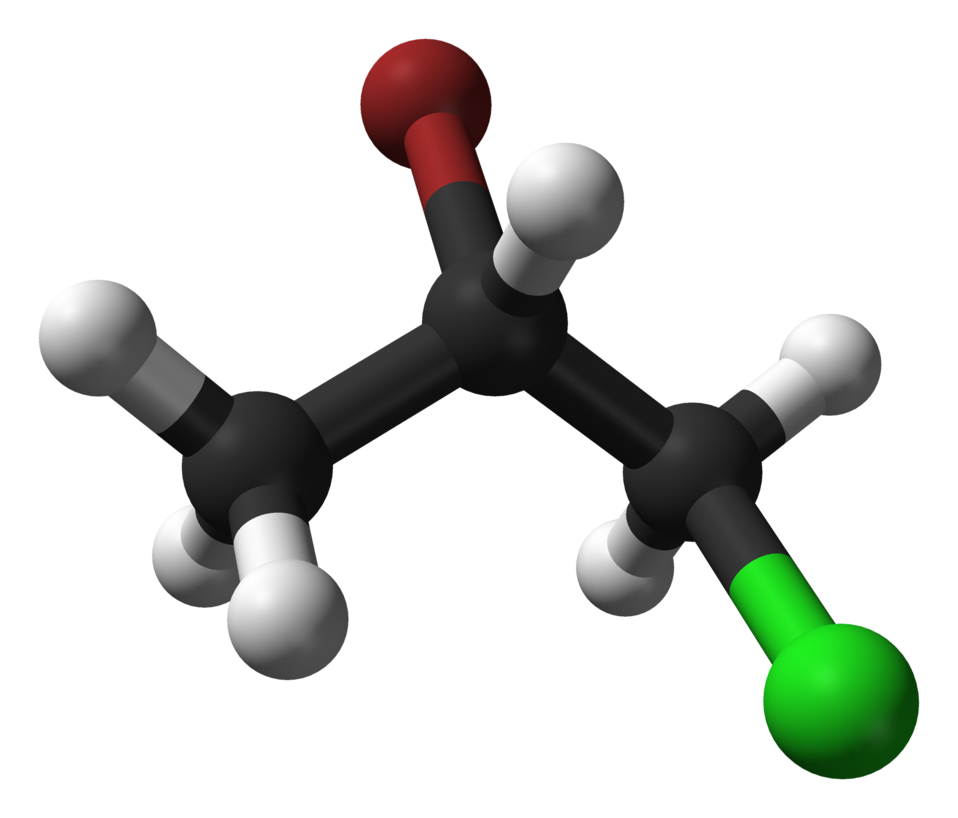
Ball-and-stick model of the anti conformer of the S enantiomer of the 2-bromo-1-chloropropane molecule, C3H6BrCl. The anti conformation predominates in the liquid state, and the molecule crystallises in this conformation, too. Colour code: Carbon, C: grey Hydrogen, H: white Chlorine, Cl: green Bromine, Br: red-brown Conformation based on J. Mol. Struct. (1973) 15, 45–59. Structure calculated with Spartan Student 4.1, using the MP2 level of theory and the 6-311 G** basis set. Image generated in Accelrys DS Visualizer.